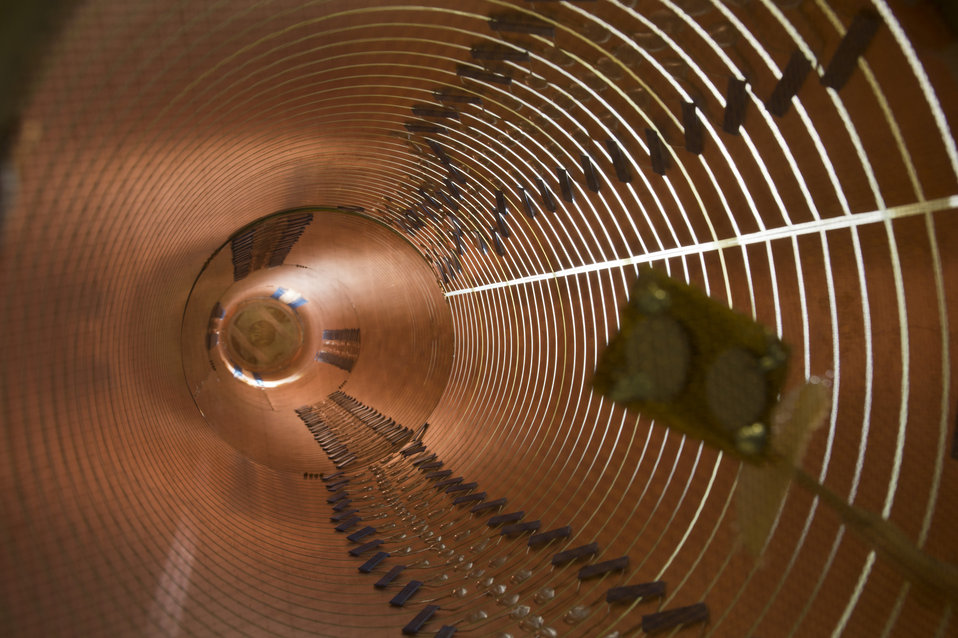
Long-bo (TPC) Time Project Chamber for Liquid Argon Detector.